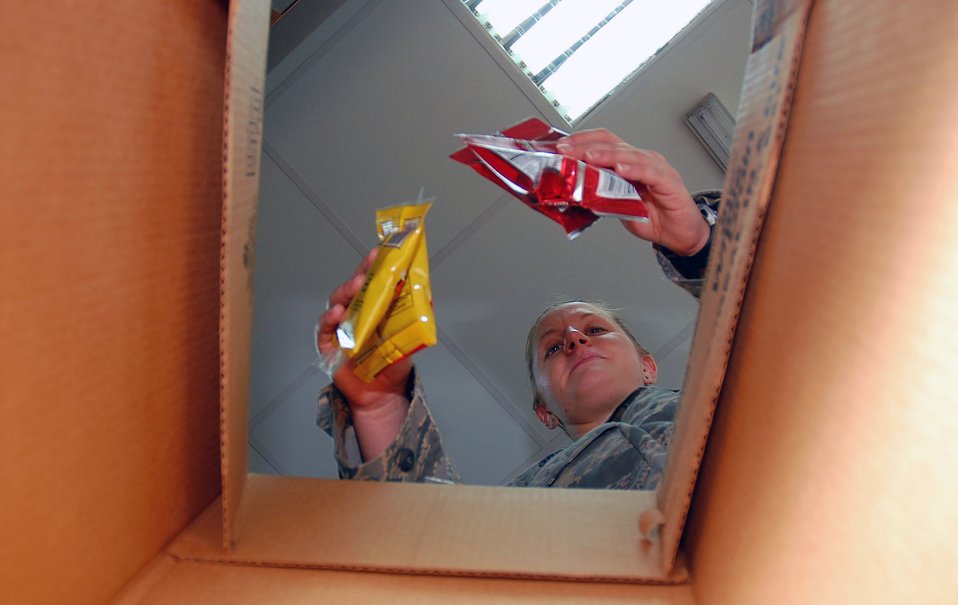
Deployed desert dining is delightful at the DFAC

Airman 1st Class Kristen Grow, 386th Expeditionary Services Squadron food services specialist, prepares a flight meal box for flight crew members Nov. 2 here. Airman Grow is deployed from Barksdale Air Force Base, La.